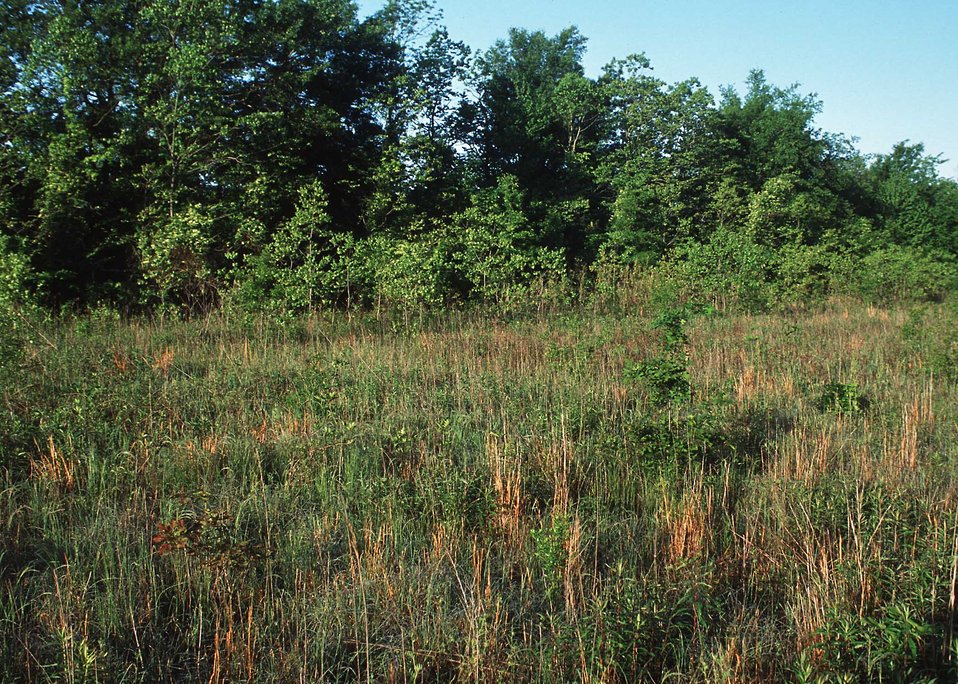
Hardwood trees planted as part of a bottomland hardwood wetlands restoration project in central Mississippi.